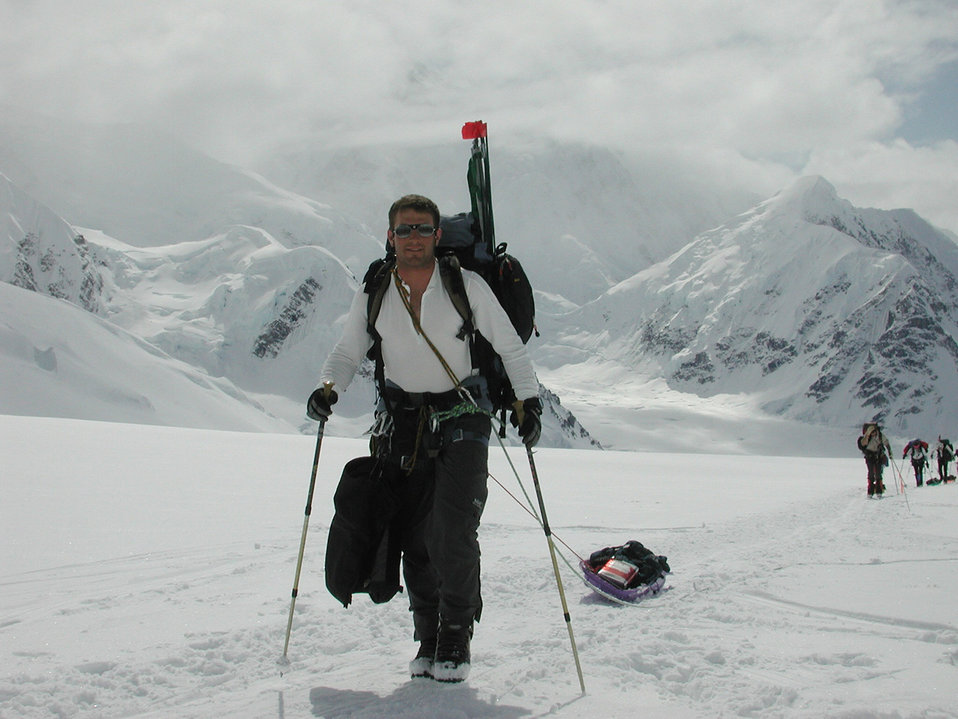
D-M captain leads Airmen up highest peak

Capt. Mark Uberuaga scales Mount McKinley while working as a mountaineering guide in college. The captain recently made another trek up the mountain May 28 leading a team of Airmen. Captain Uberuaga is an HH-60G Pave Hawk pilot with the 55th Rescue Squadron at Davis-Monthan Air Force Base, Ariz.